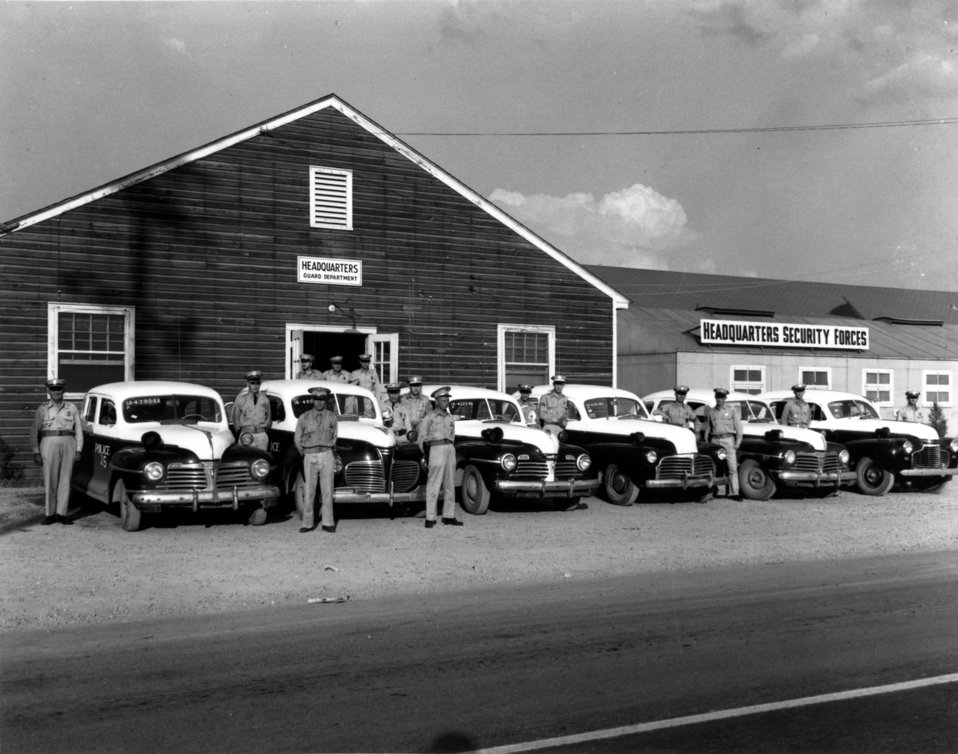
Security at Oak Ridge